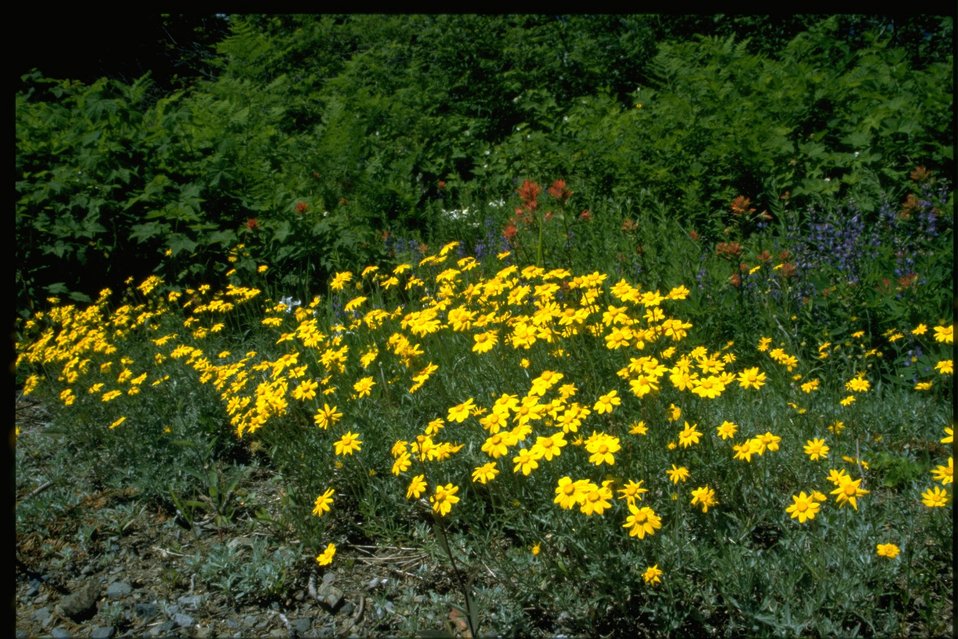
Farshot of Asteraceae, Eriophyllum lanatum.